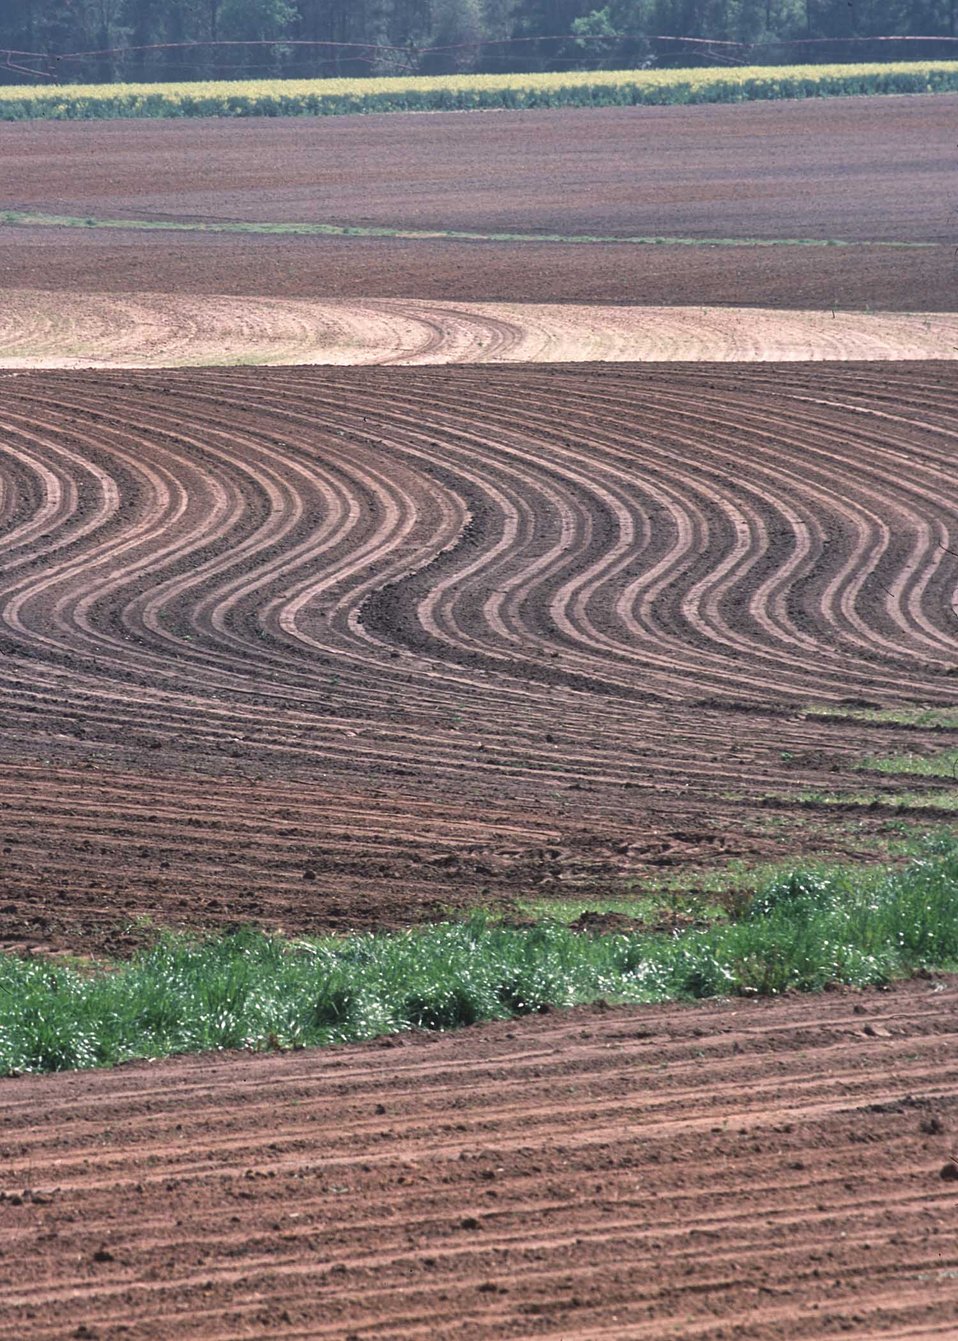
Contour farming and terraces, Tombs, County, Georgia.